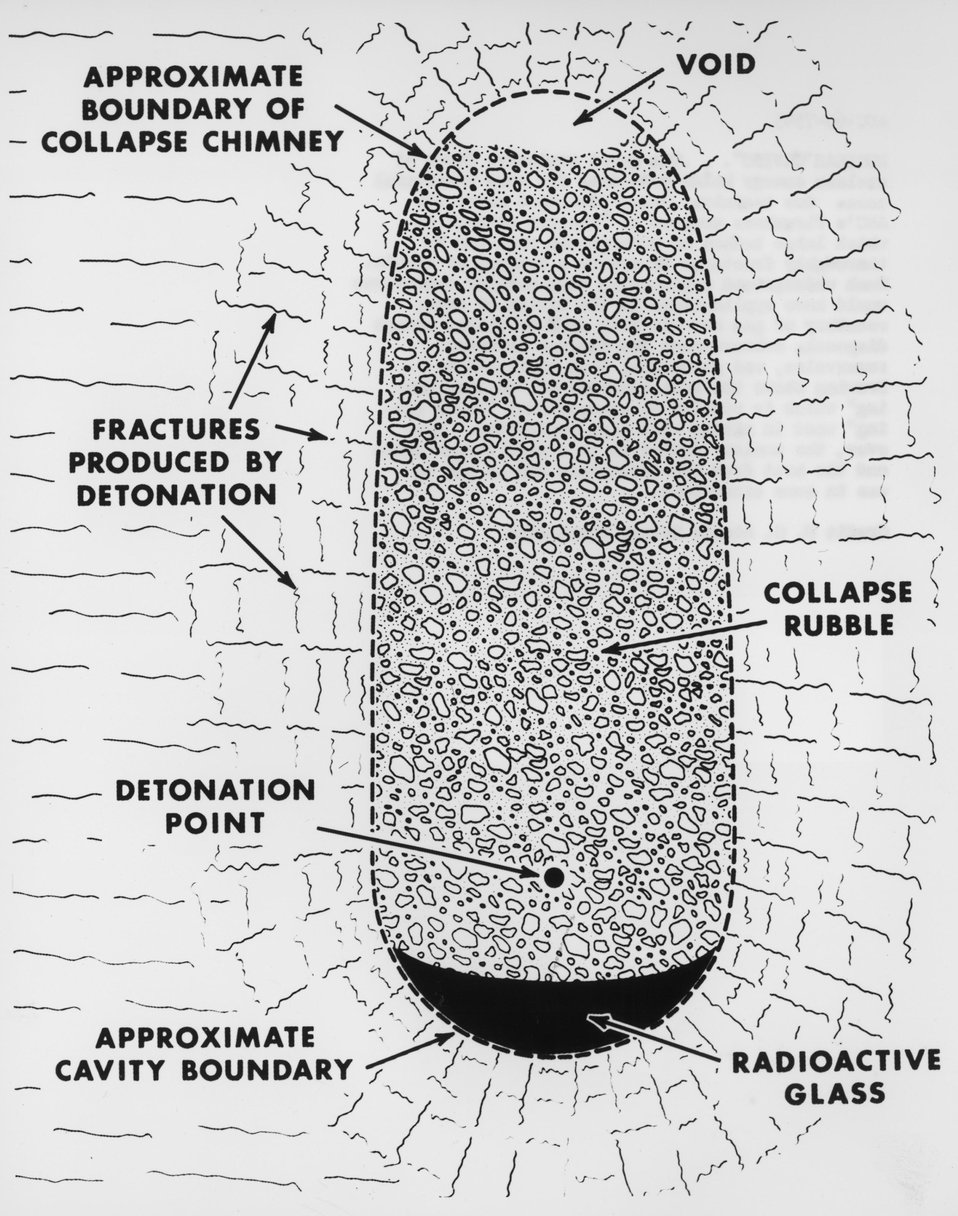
The great explosive force of nuclear energy holds potential for many beneficial uses. One technique being developed under the AEC's Plowshare program is 'nuclear caving' in which large bodies of underground rock can be thoroughly fractured to create a chimney of rubble. c. 1965